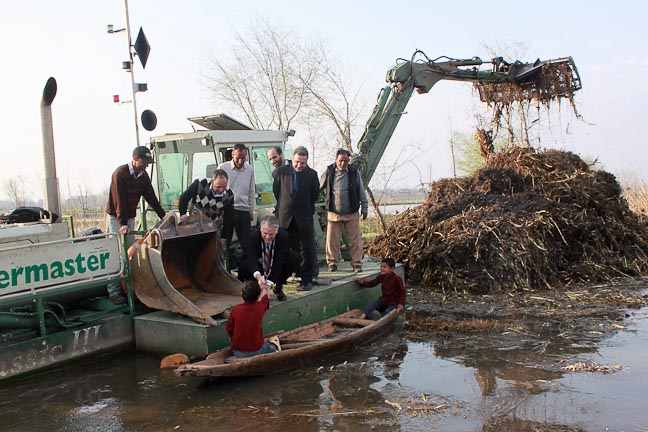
Ambassador Roemer Visits Jammu and Kashmir

U.S. Ambassador to India Timothy J. Roemer visits Jammu and Kashmir, March 17-18, 2011, to engage and listen to the people and connect with the youth of the state.